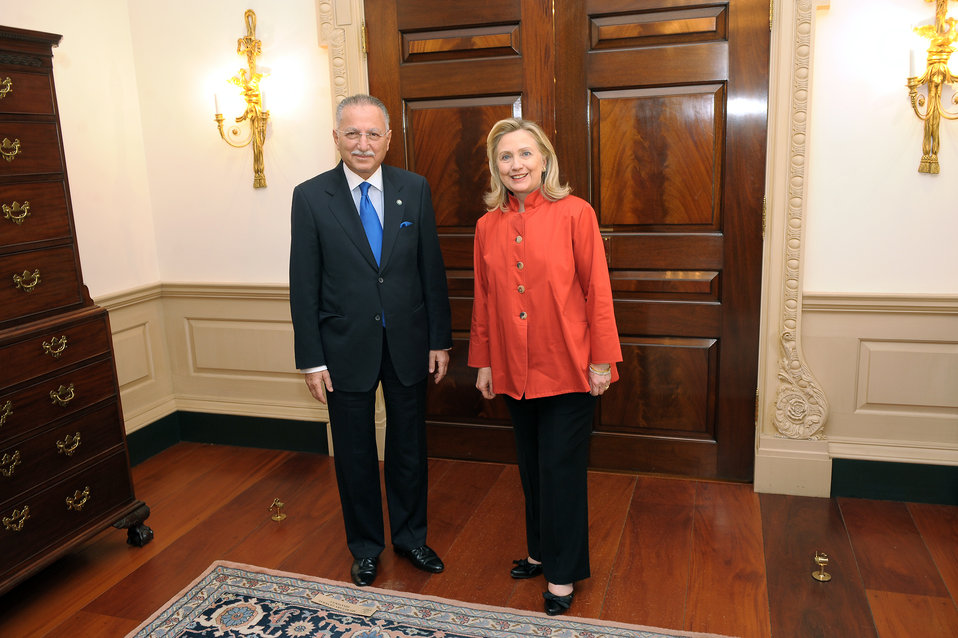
Secretary Clinton Meets With Secretary General Ihsanoglu of the Organization of Islamic Cooperation

U.S. Secretary of State Hillary Rodham Clinton meets with Secretary General Ekmeleddin Ihsanoglu of the Organization of Islamic Cooperation (OIC) at the Department of State in Washington, D.C. on March 15, 2012.